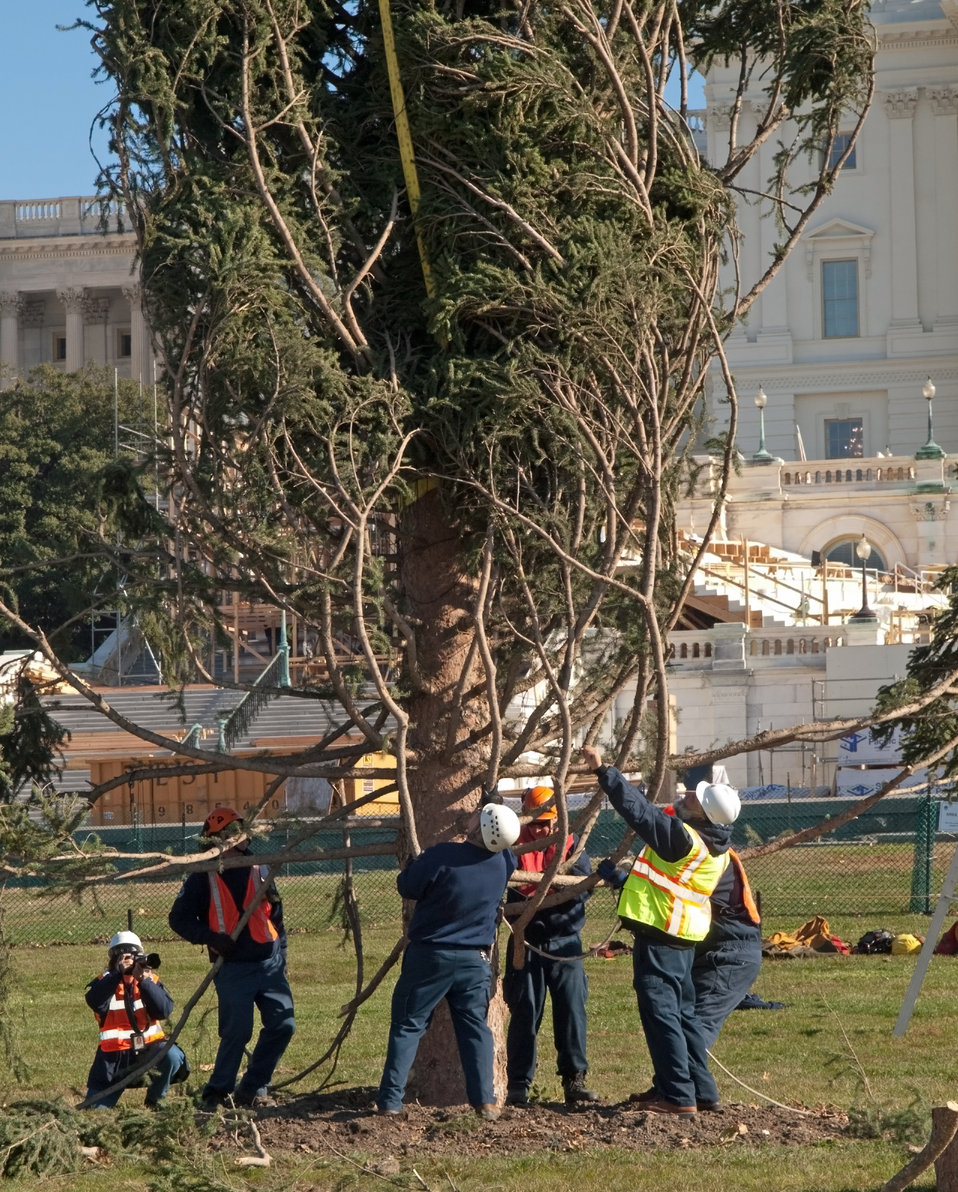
Members of the Capitol grounds crew place the 2012 Capitol Christmas Tree on the west lawn of the Capitol in Washington, D.C. on Nov.26, 2012. The 73-foot Englemann spruce traveled from the White River National Forest in Colorado.